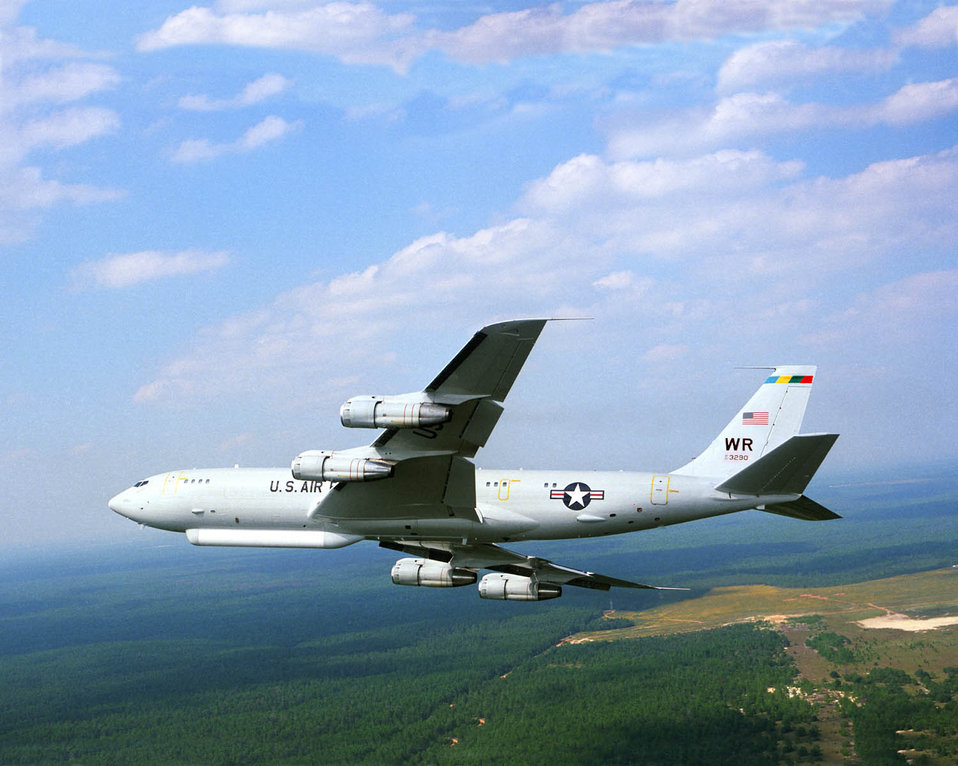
J-STARS

FILE PHOTO -- The E-8C Joint Surveillance Target Attack Radar System is the only airborne platform in operation that can maintain realtime surveillance over a corps-sized area of the battlefield. A joint Air Force - Army program, the Joint STARS uses a multi-mode side looking radar to detect, track, and classify moving ground vehicles in all conditions deep behind enemy lines.